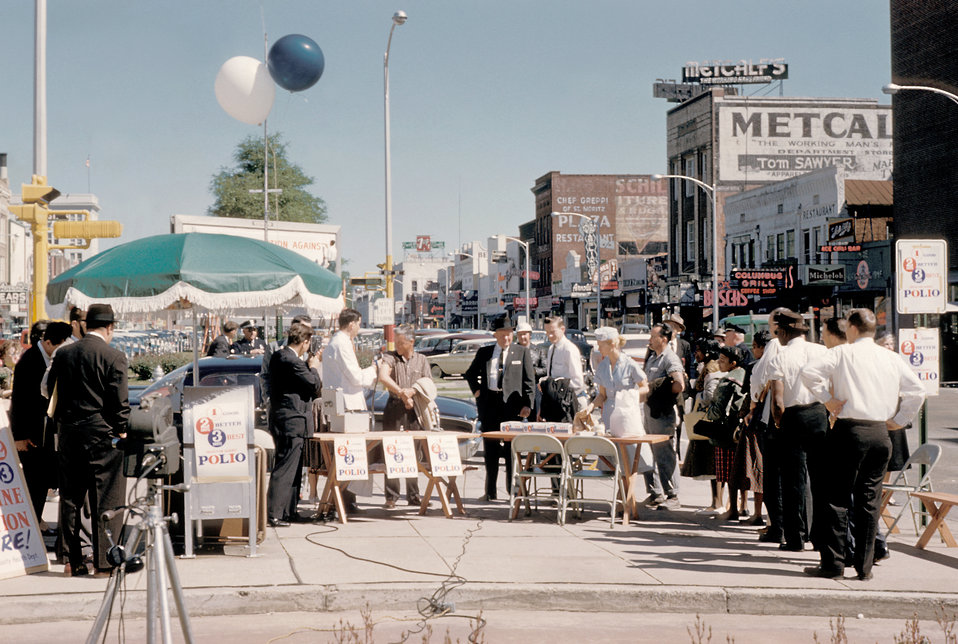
People in Columbus, Georgia awaiting polio vaccination during the earlier days of the National Polio Immunization Program.